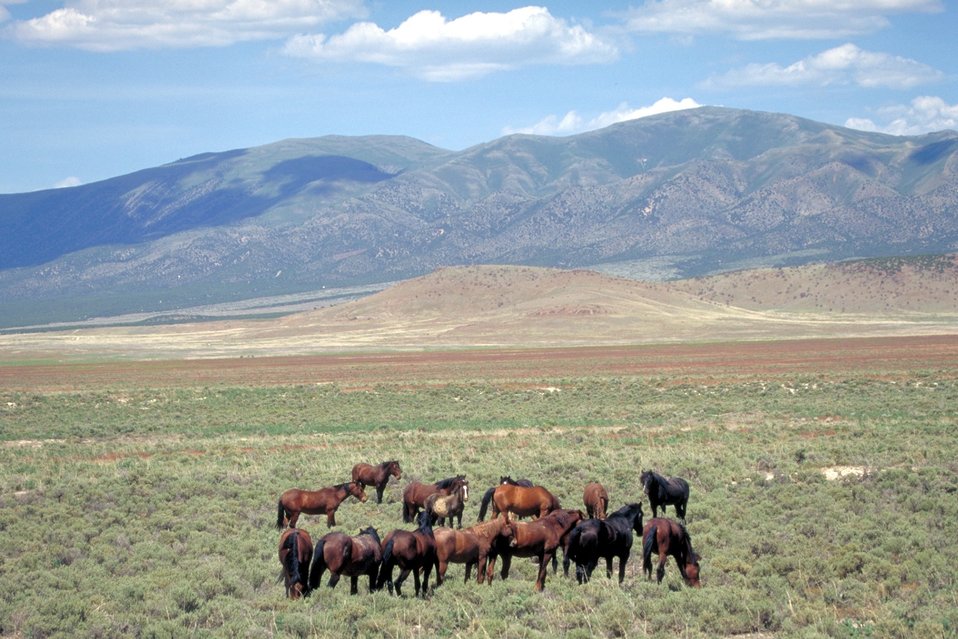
Onaqui Herd near Dugway, Utah.